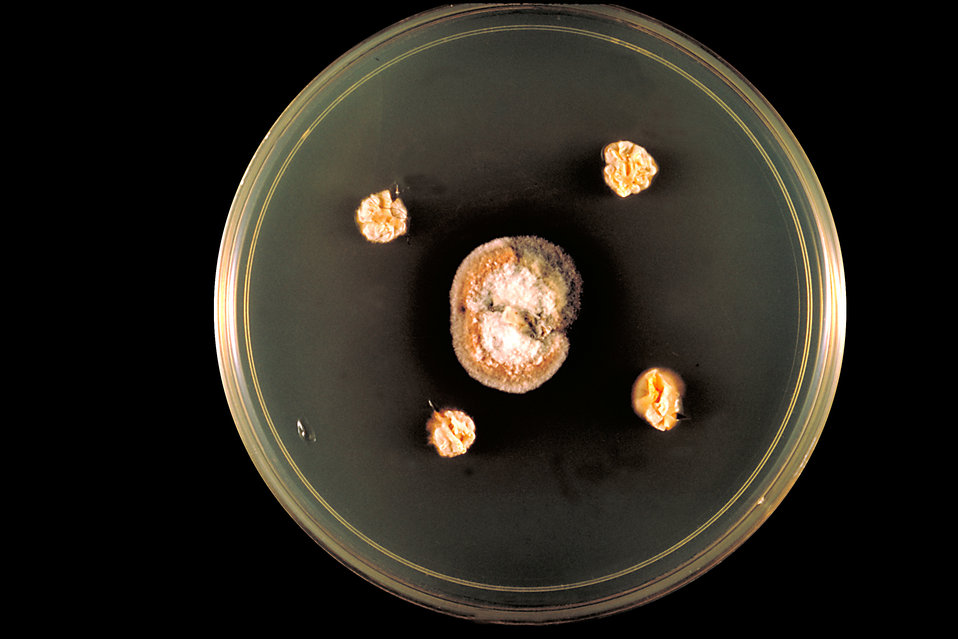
This image shows a C&C agar plate culture with colonies of the fungusTrichophyton concentricum.